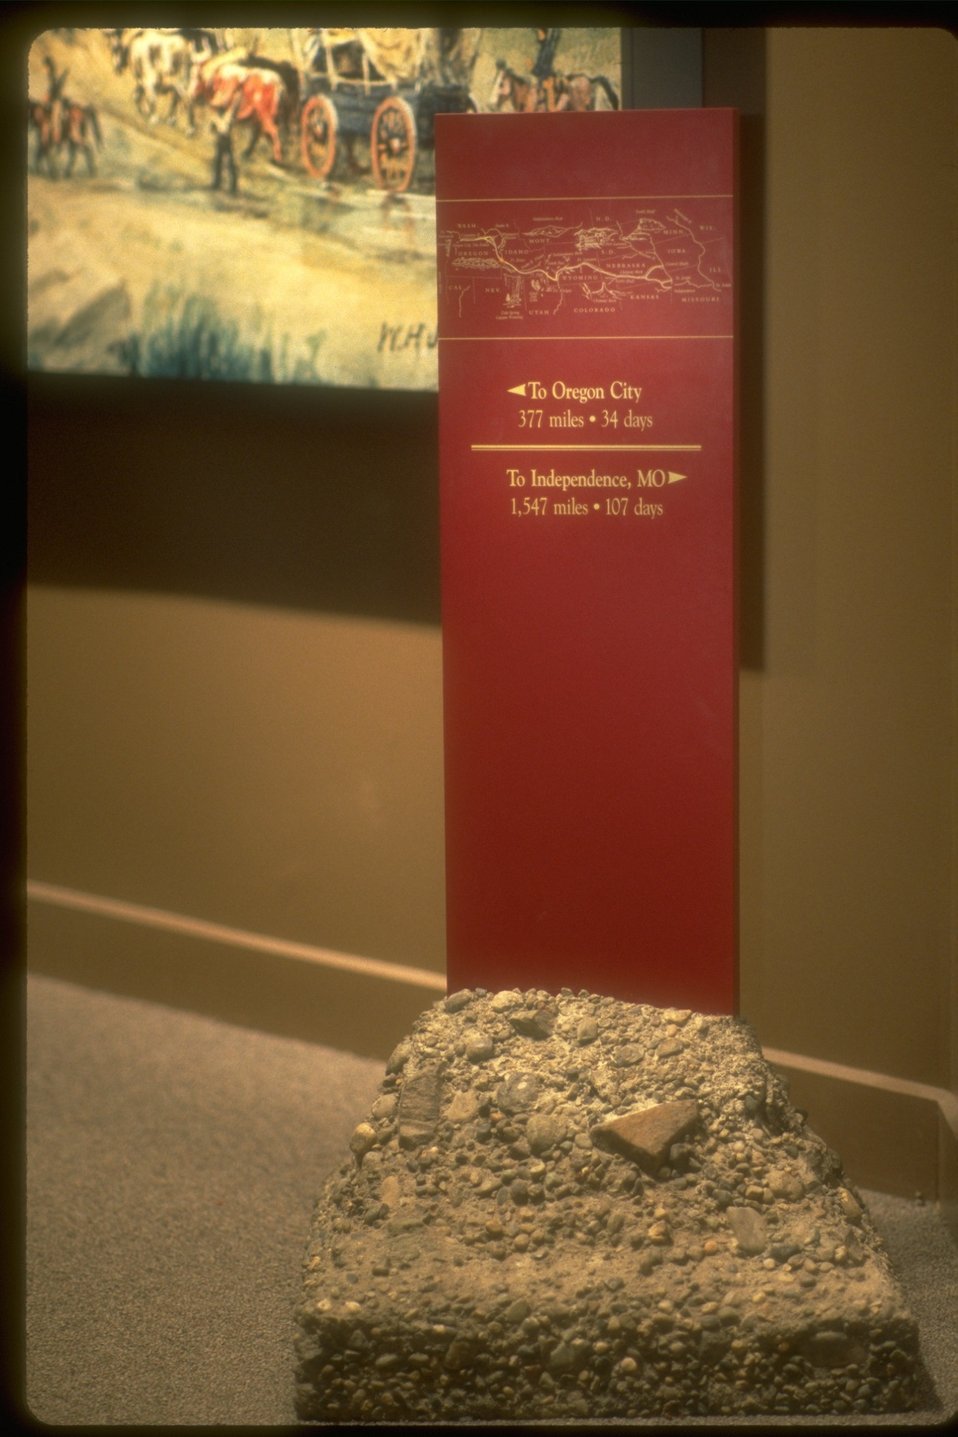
Mile post marker on display at the NHOTIC.